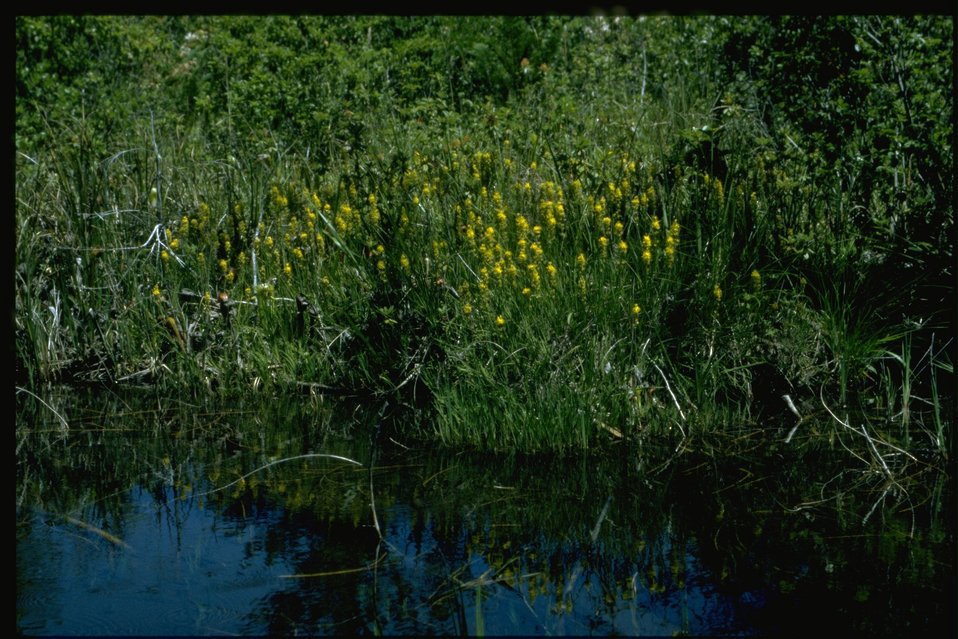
General view of Hunter Creek Bog, Northecium californicum, Darlingtonia californica (Cobra Lily).